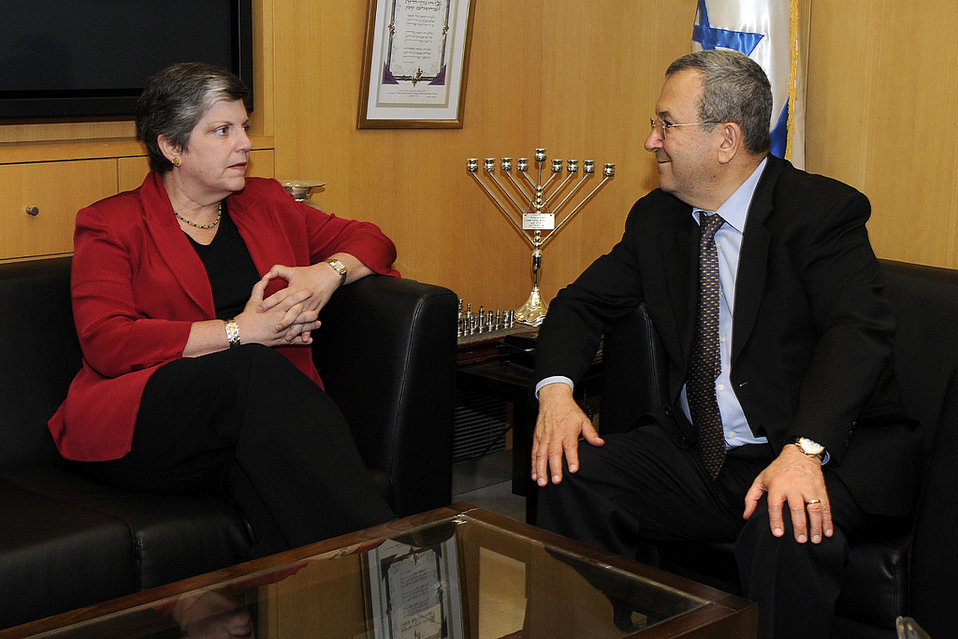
Secretary Napolitano Meets With Israeli Defense Minister Barak

U.S. Secretary of Homeland Security Janet Napolitano meets with Israeli Minister of Defense Ehud Barak in Israel, May 20-22.